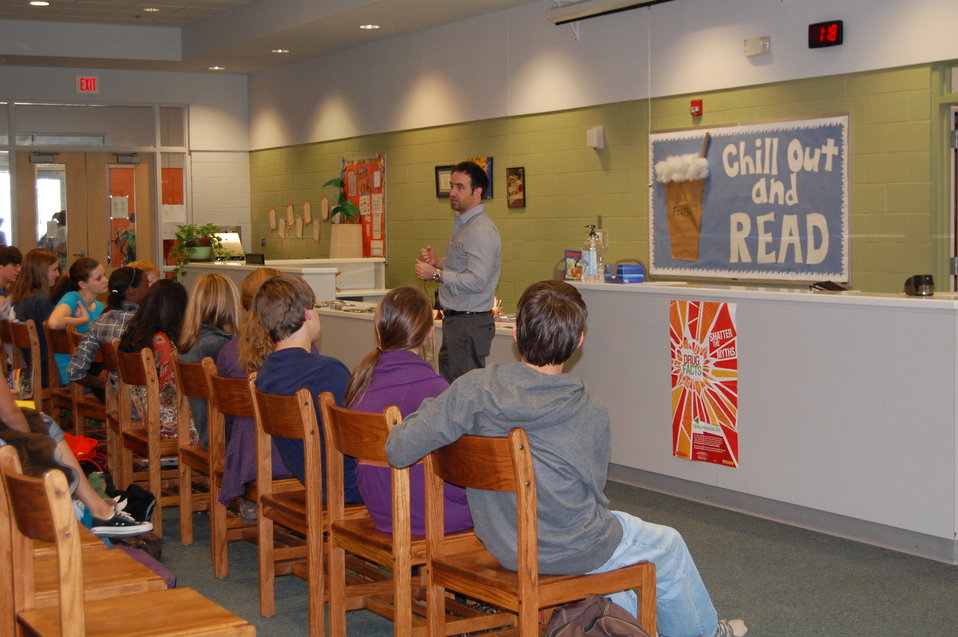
Rosa Scott Event

Scientist Kevin Freeman from the University of Mississippi answers students' questions at the Rosa Scott School in Madison, Mississippi. The school held four sessions with Dr. Freeman throughout the Day as part of National Drug Facts Week.